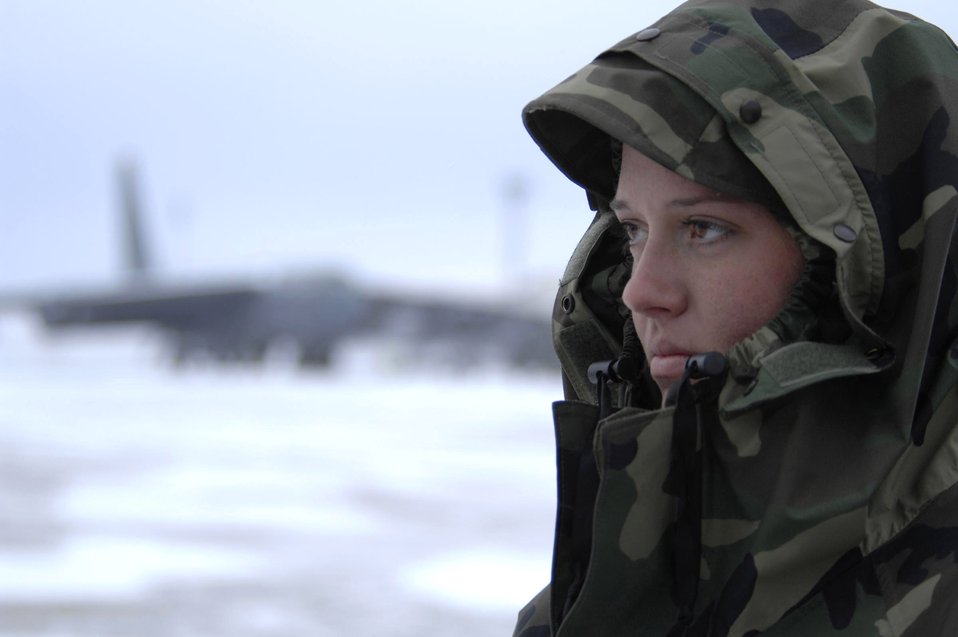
Enduring the cold

Airman Shaina Smith waits for a B-52 Stratofortress aircrew Jan. 8 at Minot Air Force Base, N.D. Airman Smith and the rest of her maintenance team work during harsh sub-zero temperatures and gusts of wind up to 50 mph.